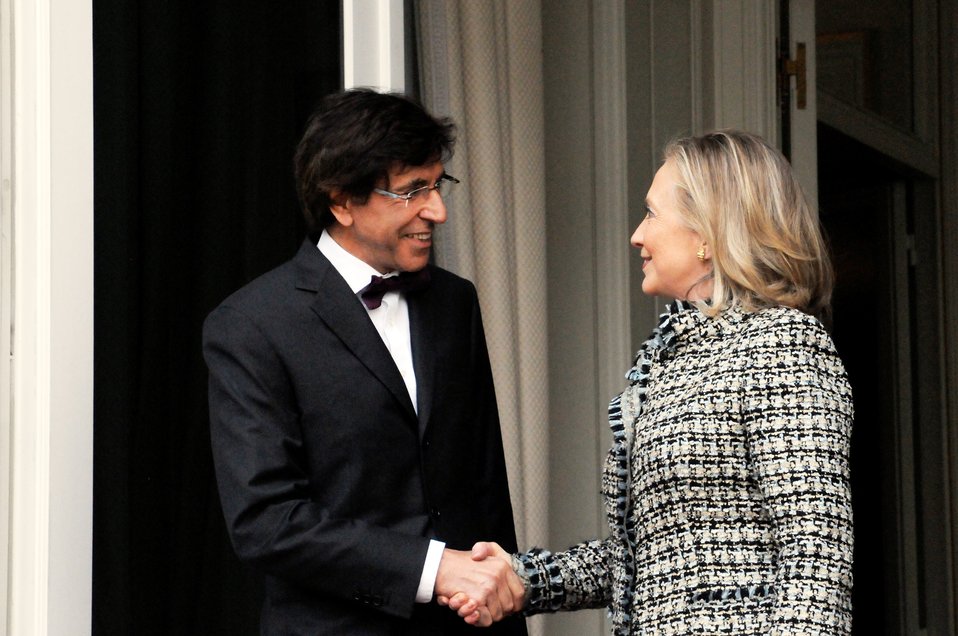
Secretary Clinton Is Greeted By Belgian Prime Minister Di Rupo

U.S. Secretary of State Hillary Rodham Clinton is greeted by Belgian Prime Minister Elio Di Rupo, center, upon her arrival at the Prime Minister's residence in Brussels, Belgium, on April 18, 2012.